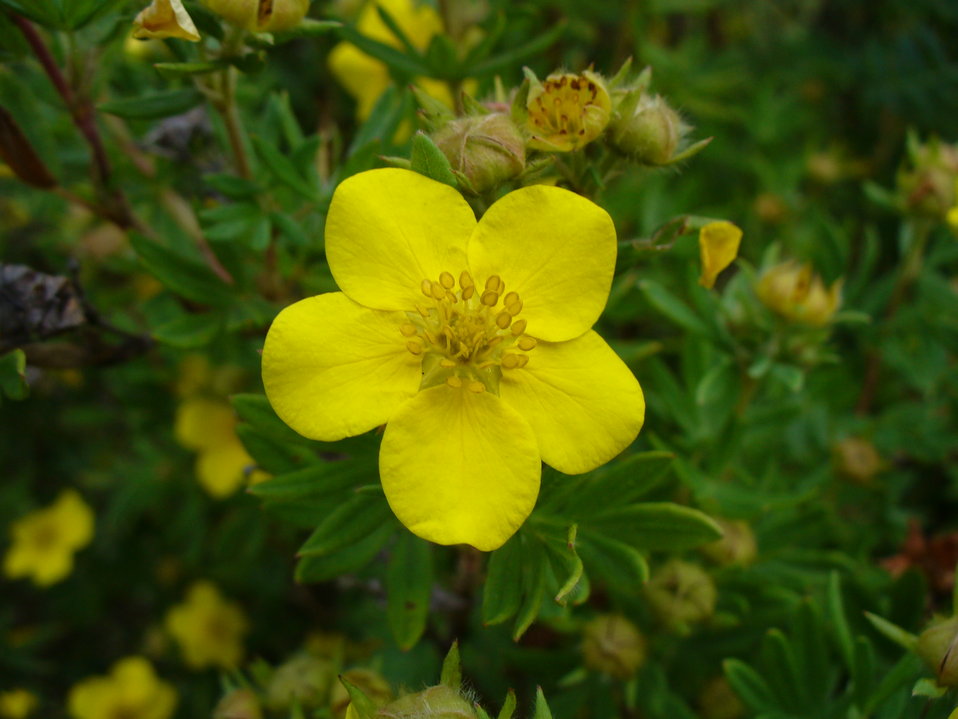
I am the originator of this photo. I hold the copyright. I release it to the public domain. This photo depicts a Dasiphora fruticosa flower.